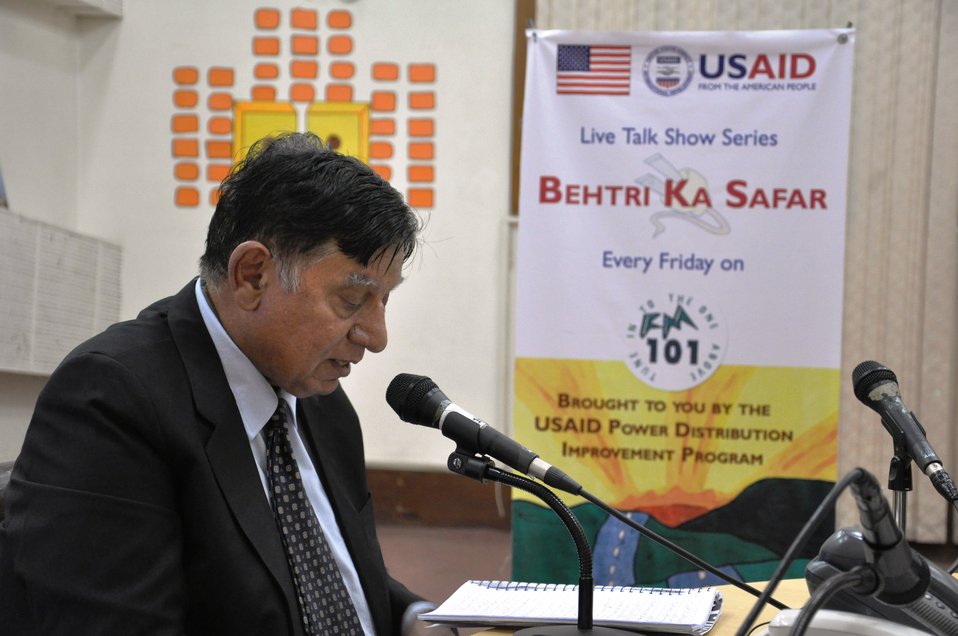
Dr. Zahir Fikri explaining Demand Side Management (DSM) in Episode 05 of Behtari Ka Safar on Oct 21, 2011

Power Distribution Program's engineering expert Dr. Zahir Fikri explains Demand Side Management (DSM) which is the modification of consumer demand for energy through methods like financial incentives, awareness, education etc. DSM can help reduce demand especially during peak hours, save consumer’s money and releasing precious megawatts of power on the national power grid.